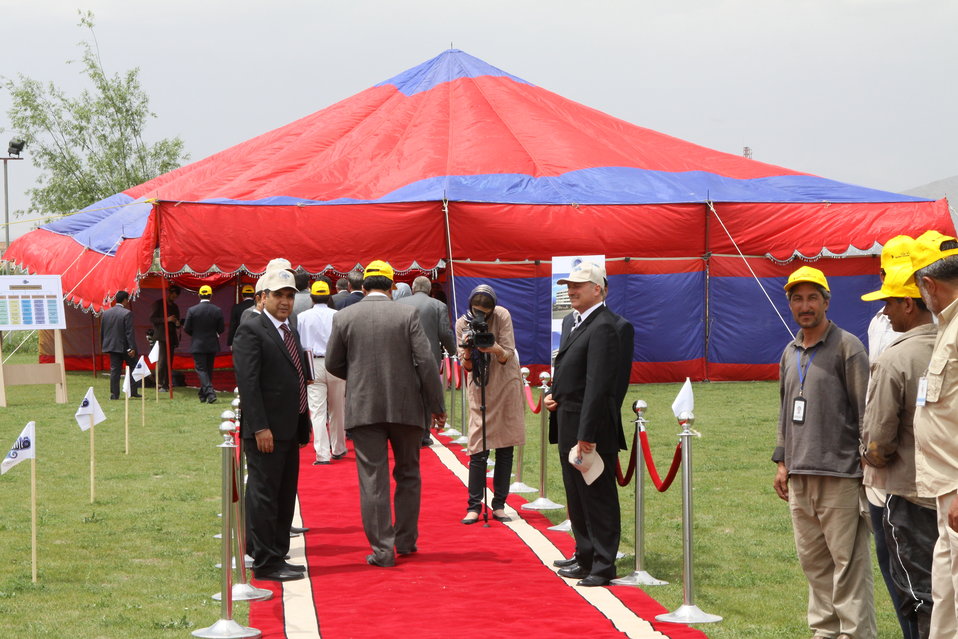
100526 AUAF Graduation 353